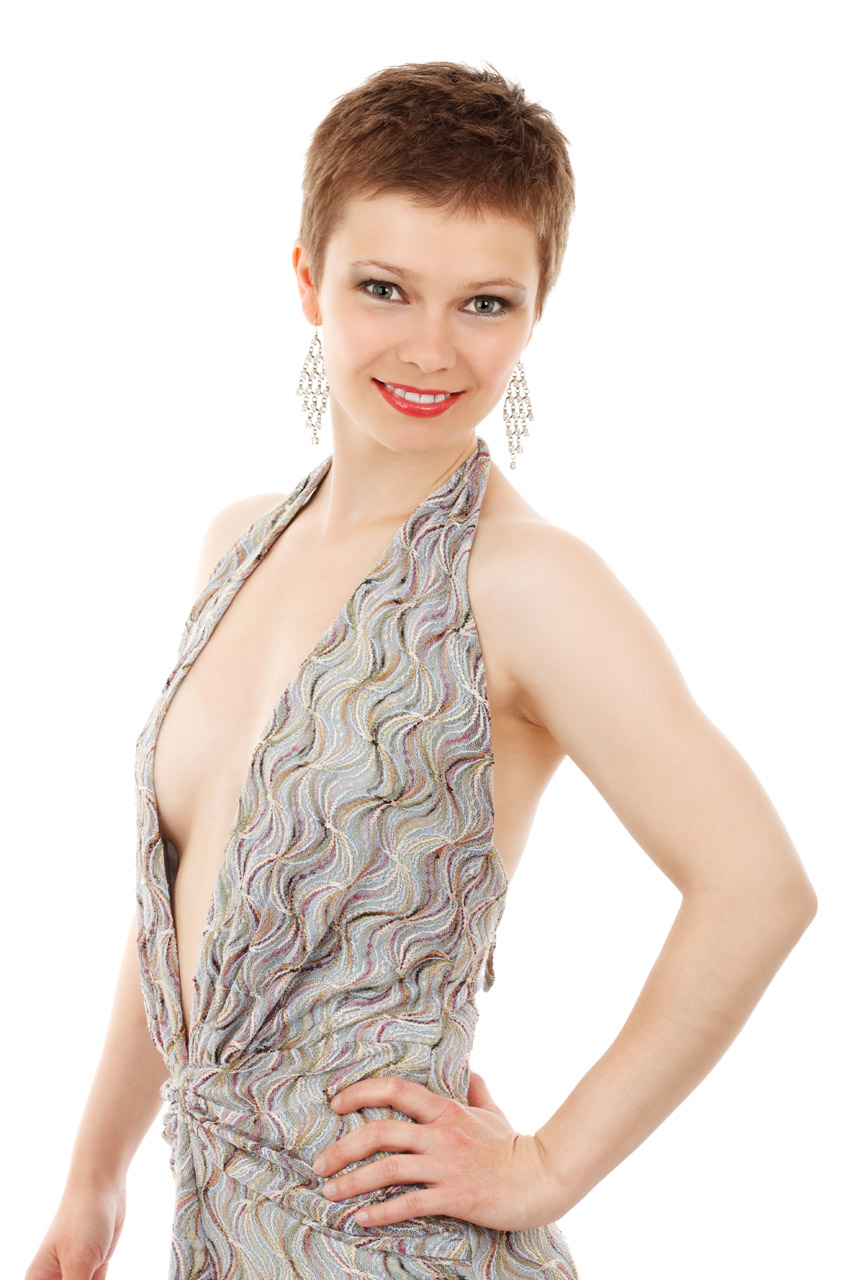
Female model posing

Young fashion model posing in her dress.